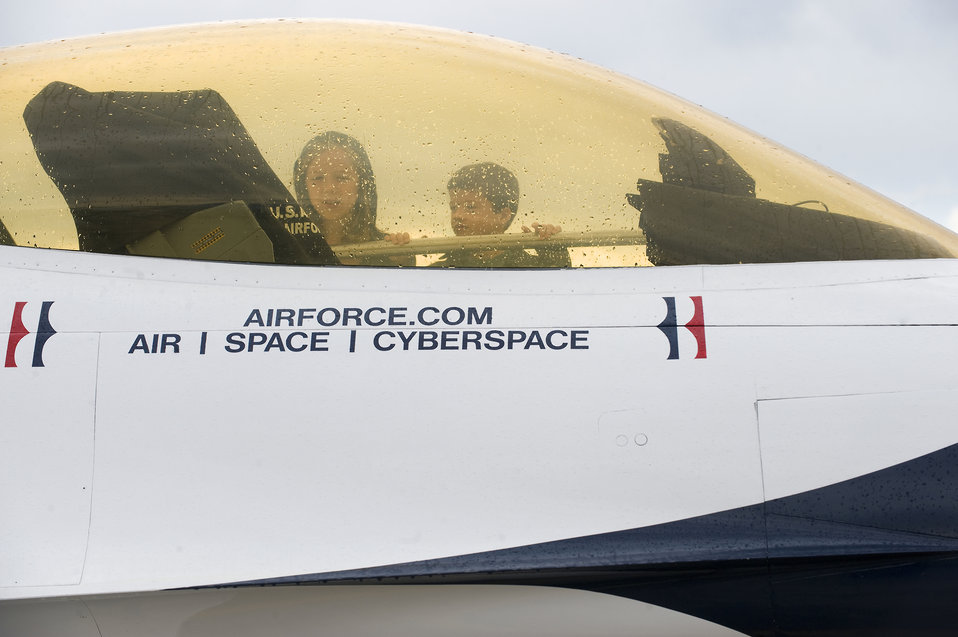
Air Force Week Sacramento

A couple young spectators take a look inside the cockpit of an Air Force Thunderbirds F-16 Fighting Falcon Sept. 12, 2009, during the California Capital Air Show, the culminating event of Air Force Week Sacramento. Air Force Week Sacramento is an event featuring various activities and exhibitions to educate the community about the Air Force's capabilities and missions.